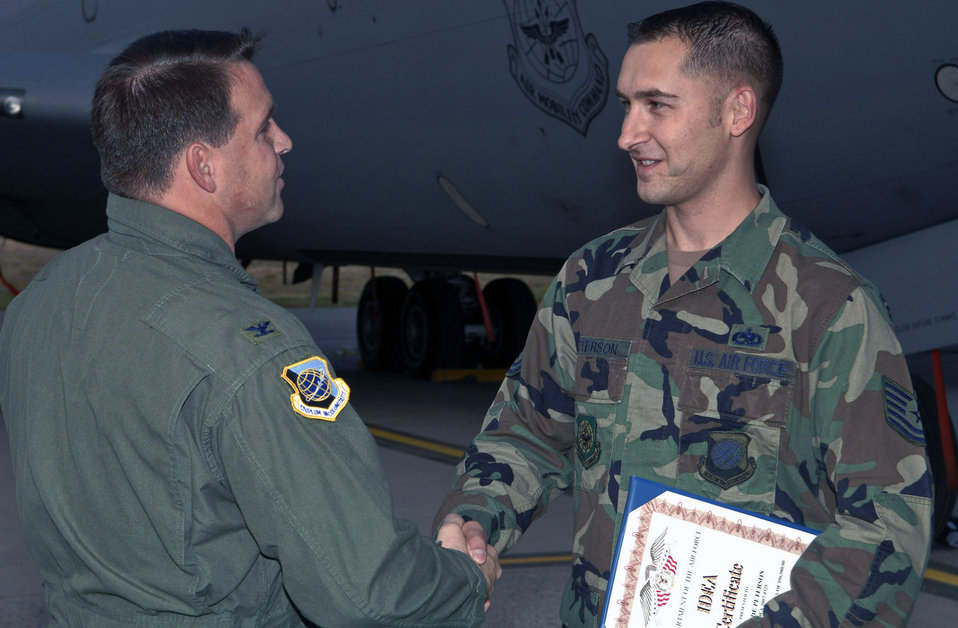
Fairchild NCO receives $10,000 for great idea

Col. Thomas Sharpy presents an Innovative Development through Employee Awareness certificate to Tech. Sgt. Cade Peterson Aug. 15 at Fairchild Air Force Base, Wash. Sergeant Peterson was awarded $10,000 for his IDEA to change certain technical order procedures. Sergeant Peterson is a 92nd Maintenance Operations Squadron senior weapon system coordinator and an experienced KC-10 Extender and KC-135 Stratotanker crew chief. Colonel Sharpy is the 92nd Air Refueling Wing commander.